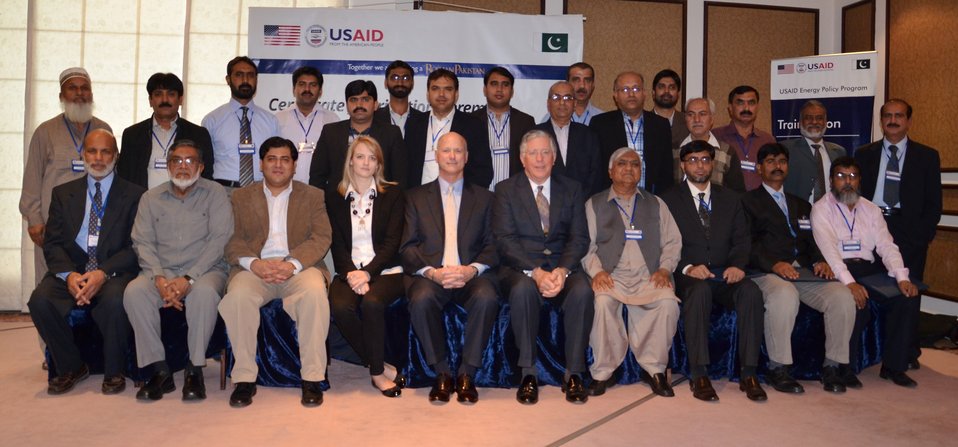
Group photo of trainees with Tim Moore, Acting Director USAID Energy Office and Jimmy Hicks, Chief of Party, Energy Policy Program